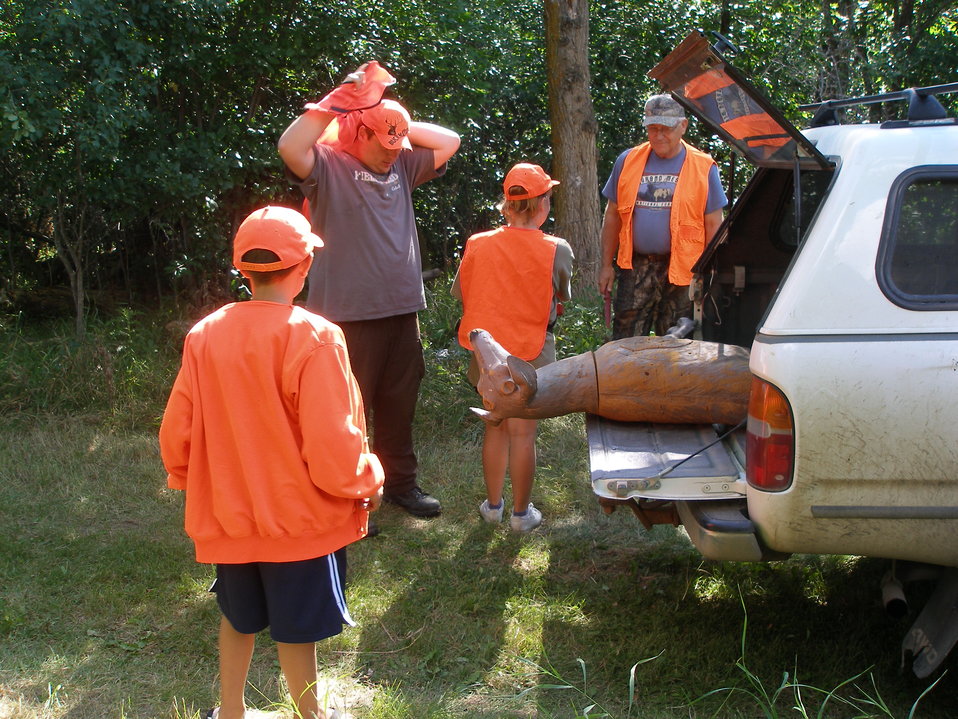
2011 Greenwing Day - Game Warden scenario session

Des Lacs National Wildlife Refuge, Tasker's Coulee

Gotta wear that orange and be seen!